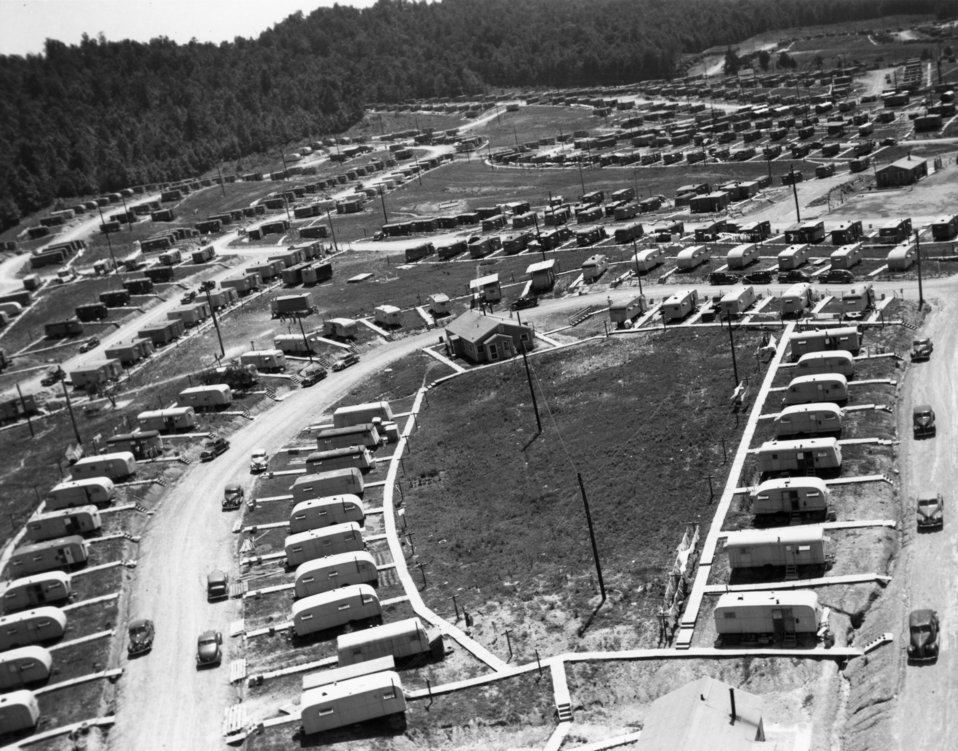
Aerial of Oak Ridge